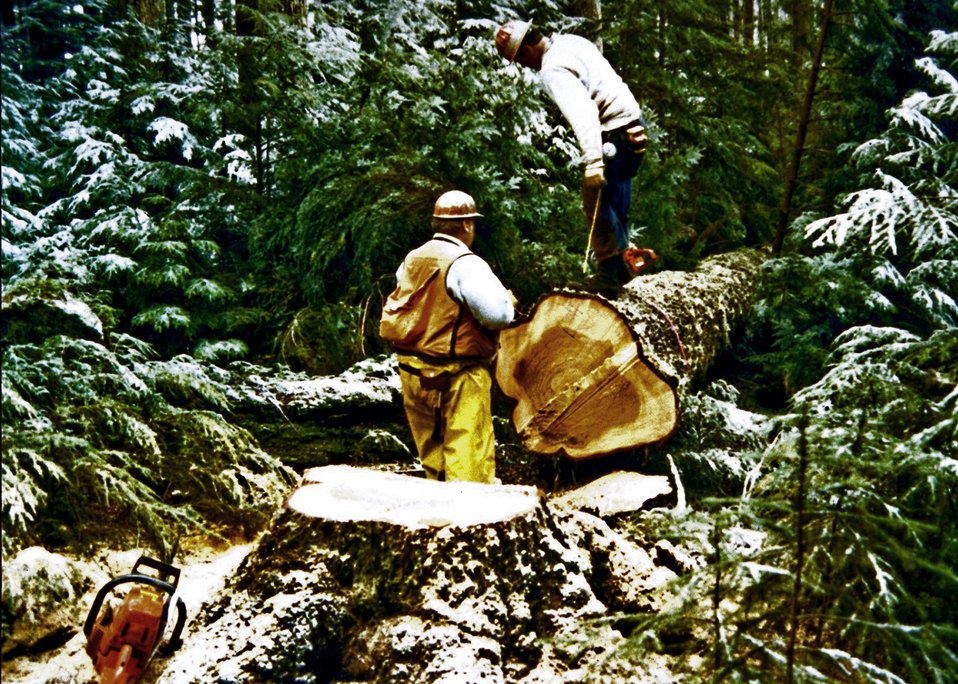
3-P Fallers at Buyer's Deadhorse Timber Sale.